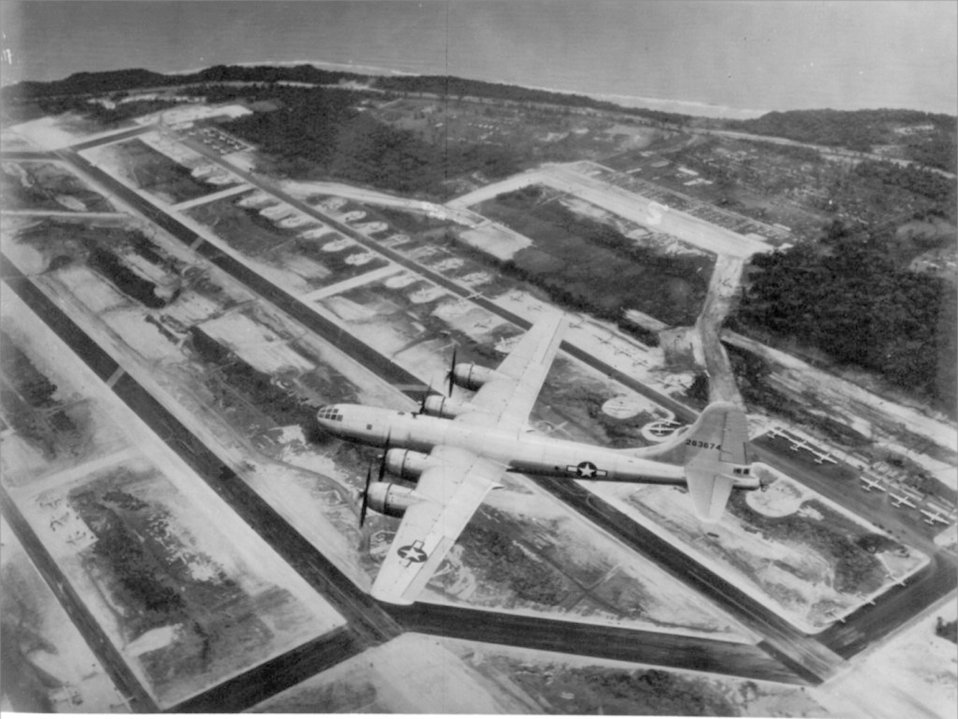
Northwest Field Cultural Resource Survey

A B-29 is in flight over Northwest Field, Guam. Records indicate this particular bomber was assigned to the 315th Bomb Wing, 501st Bomb Group.